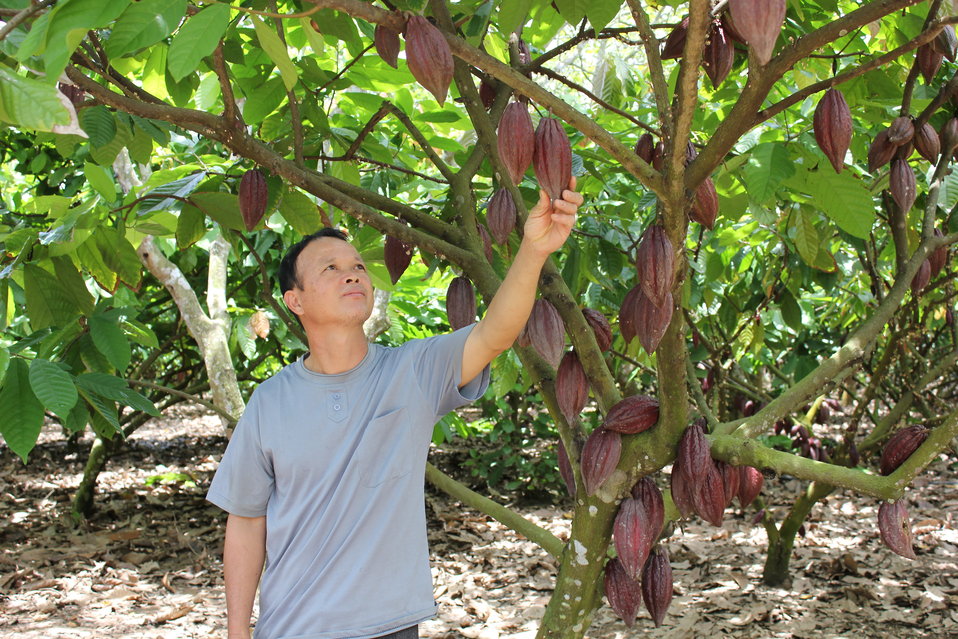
USAID supports cocoa cultivation in central Vietnam

Ea Kar District, Dak Lak Province. August 7, 2013.